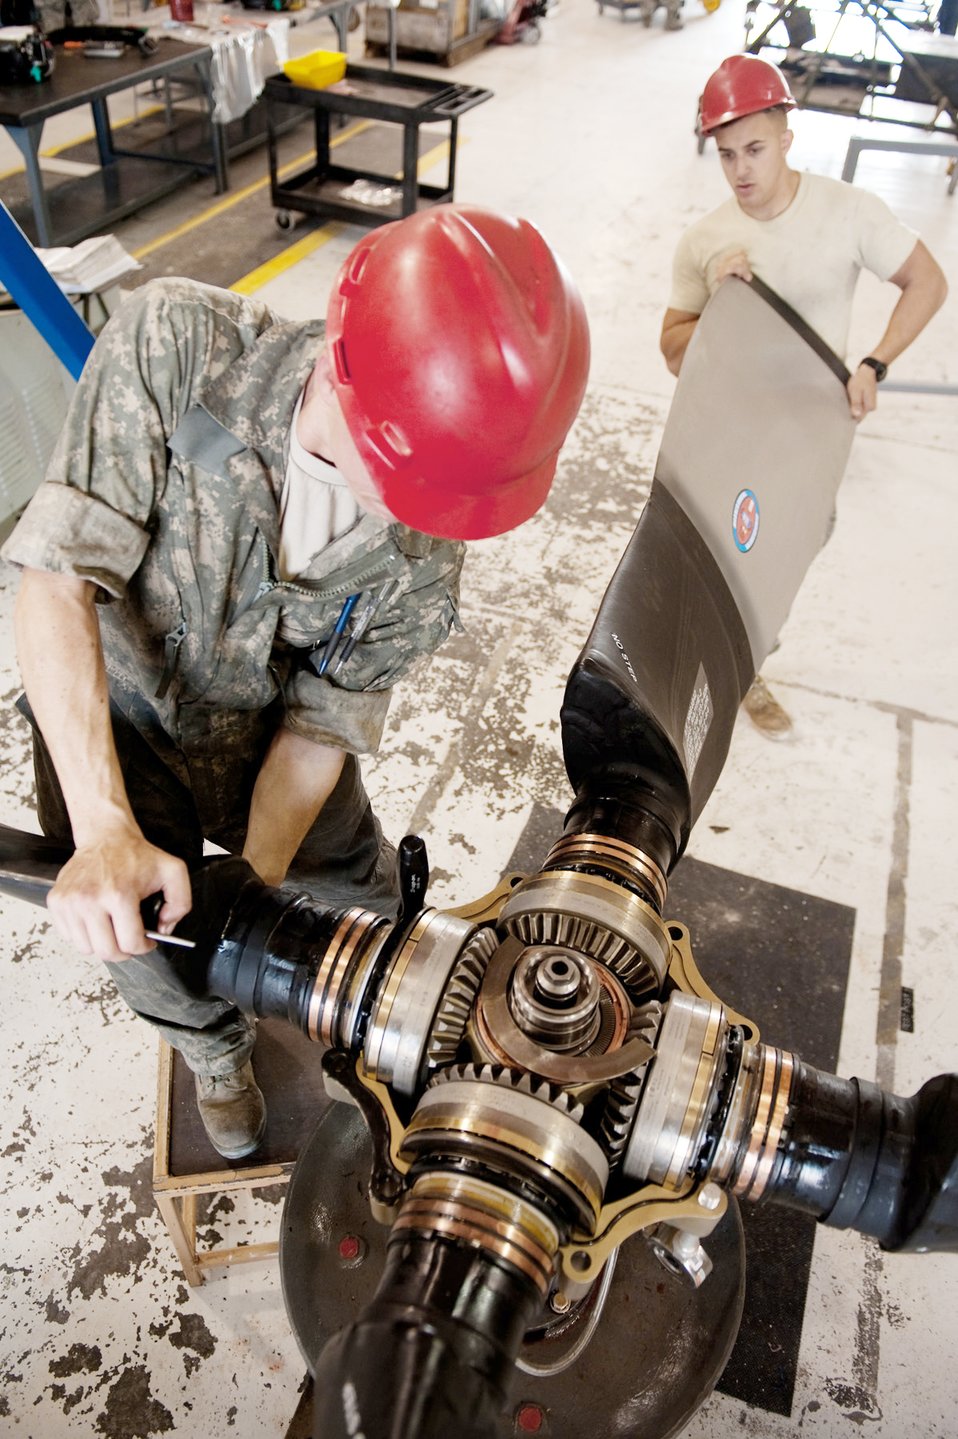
Twisting to the right, then left

Staff Sgt. Sean Acrea (left) and Airman 1st Class Chris Basile install a new propeller blade into a C-130H Hercules hub assembly Dec. 15, 2009, in Southwest Asia. Sergeant Acrea and Airman Basile work in a centralized repair facility to refurbish and repair C-130 propeller assemblies for aircraft operating throughout Southwest Asia. They are assigned to the 379th Expeditionary Maintenance Squadron.